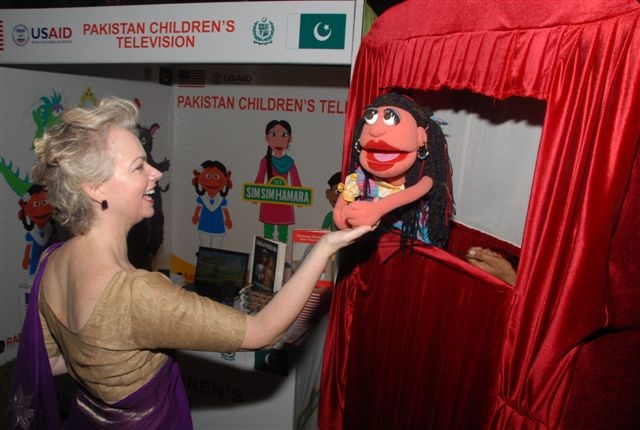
Celebration of America’s Independence Day

Lahore, June 30, 2011 - Carmela Conroy, Consul General Lahore visiting the PCTV stall .The Pakistan Children’s Television (PCTV) program participated in the open house during Celebration of America’s Independence Day that featured a series of USAID displays to introduce guests to U.S. assistance programs in Pakistan.